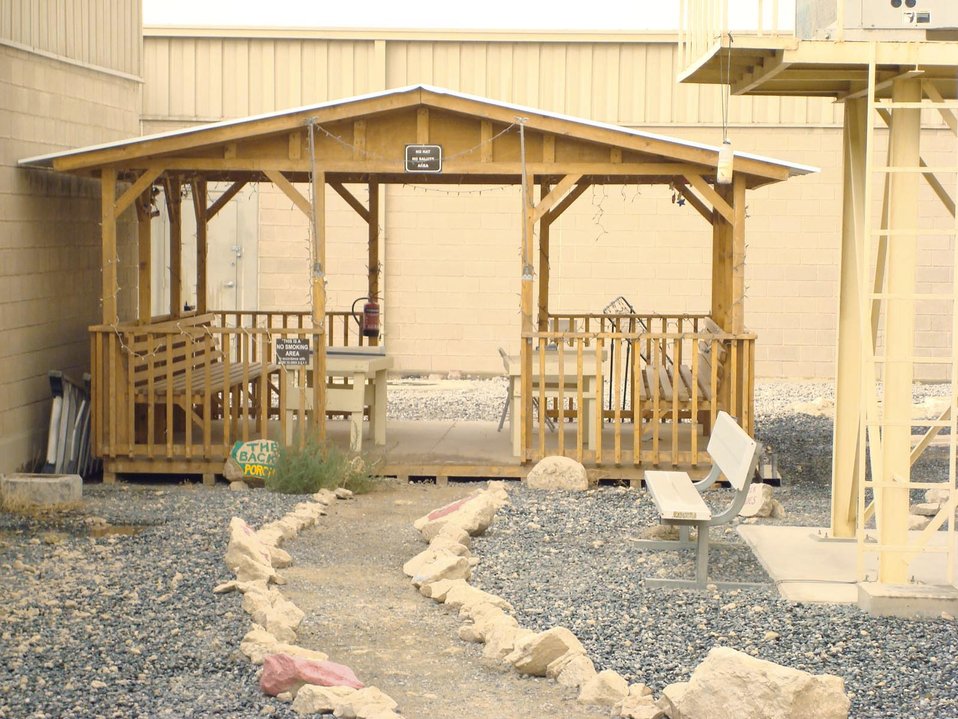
386th EMDG Airmen boast garden oasis

The 386th Expeditionary Medical Group's gazebo and patio before Col. Reynold D'Lima created a desert garden using local plants, vegetation and seeds from fruits and vegetables collected from the dining facility. Colonel D'Lima is a provider assigned to the 386th EMDG.